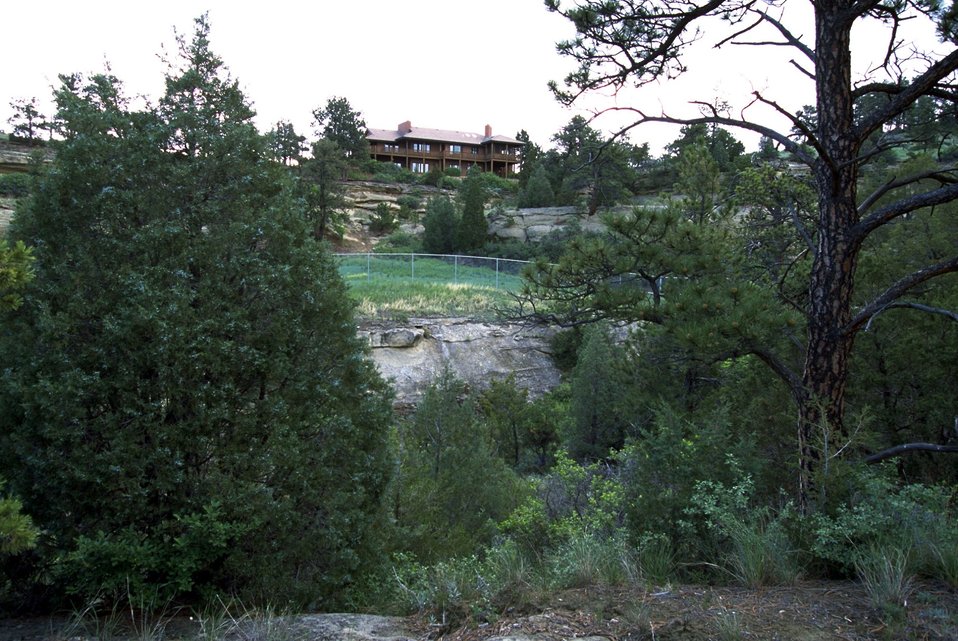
View of the Vince Larsen residence in the Four Dances Natural Area